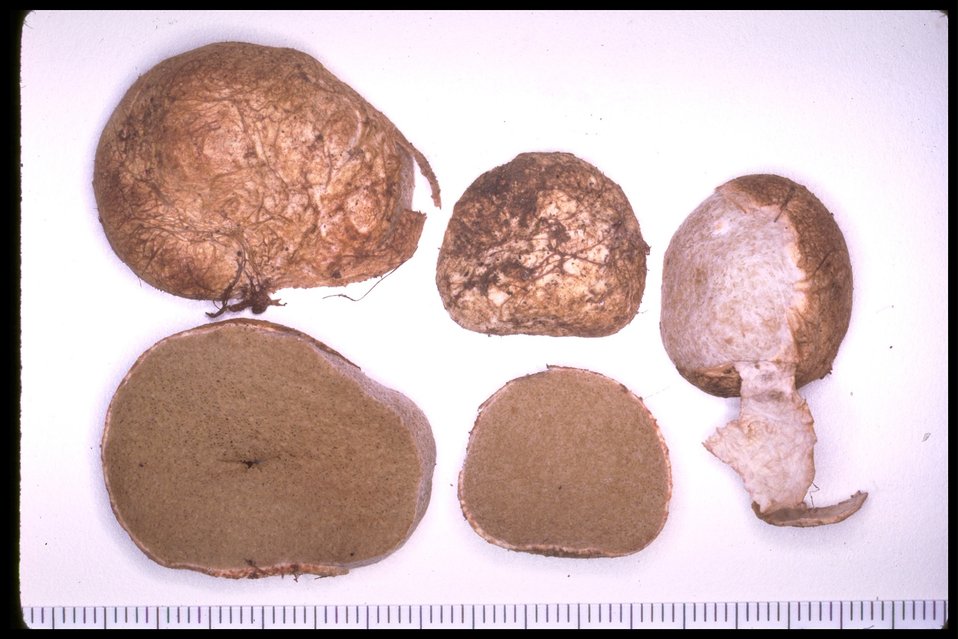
Rhizopogon flavofibrillosus, more commonly known as the Rhizopogon.